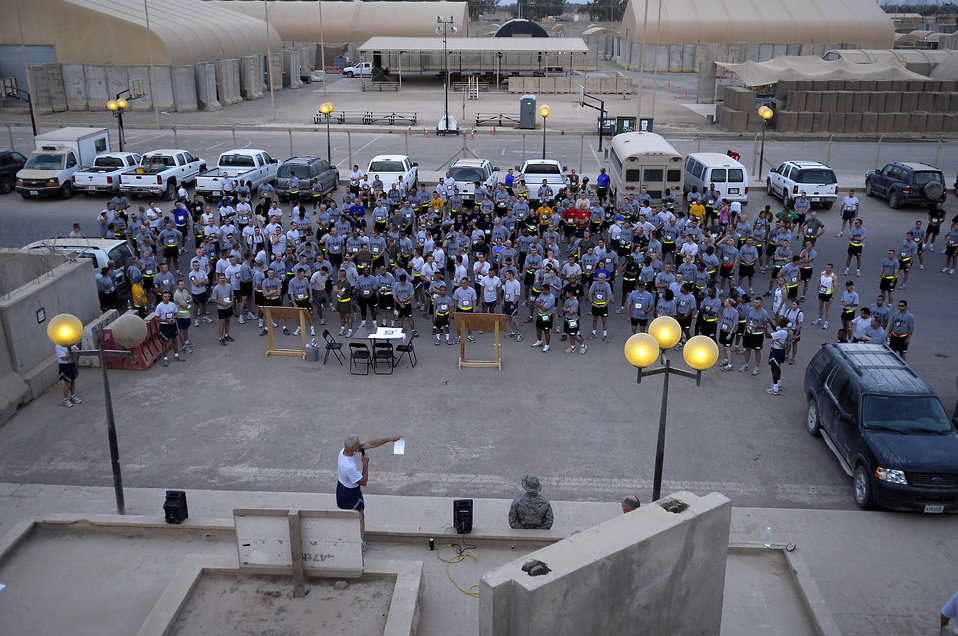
Servicemembers take part in Baghdad Boilermaker

More than 240 deployed servicemembers from around the Victory Base complex participate in the Baghdad Boilermaker 15-kilometer race June 13 at Sather Air Base, Iraq. The race was organized by Master Sgts. James Carrabba and Jeffrey Conant who have both participated in the Utica, N.Y., Boilermaker for years.